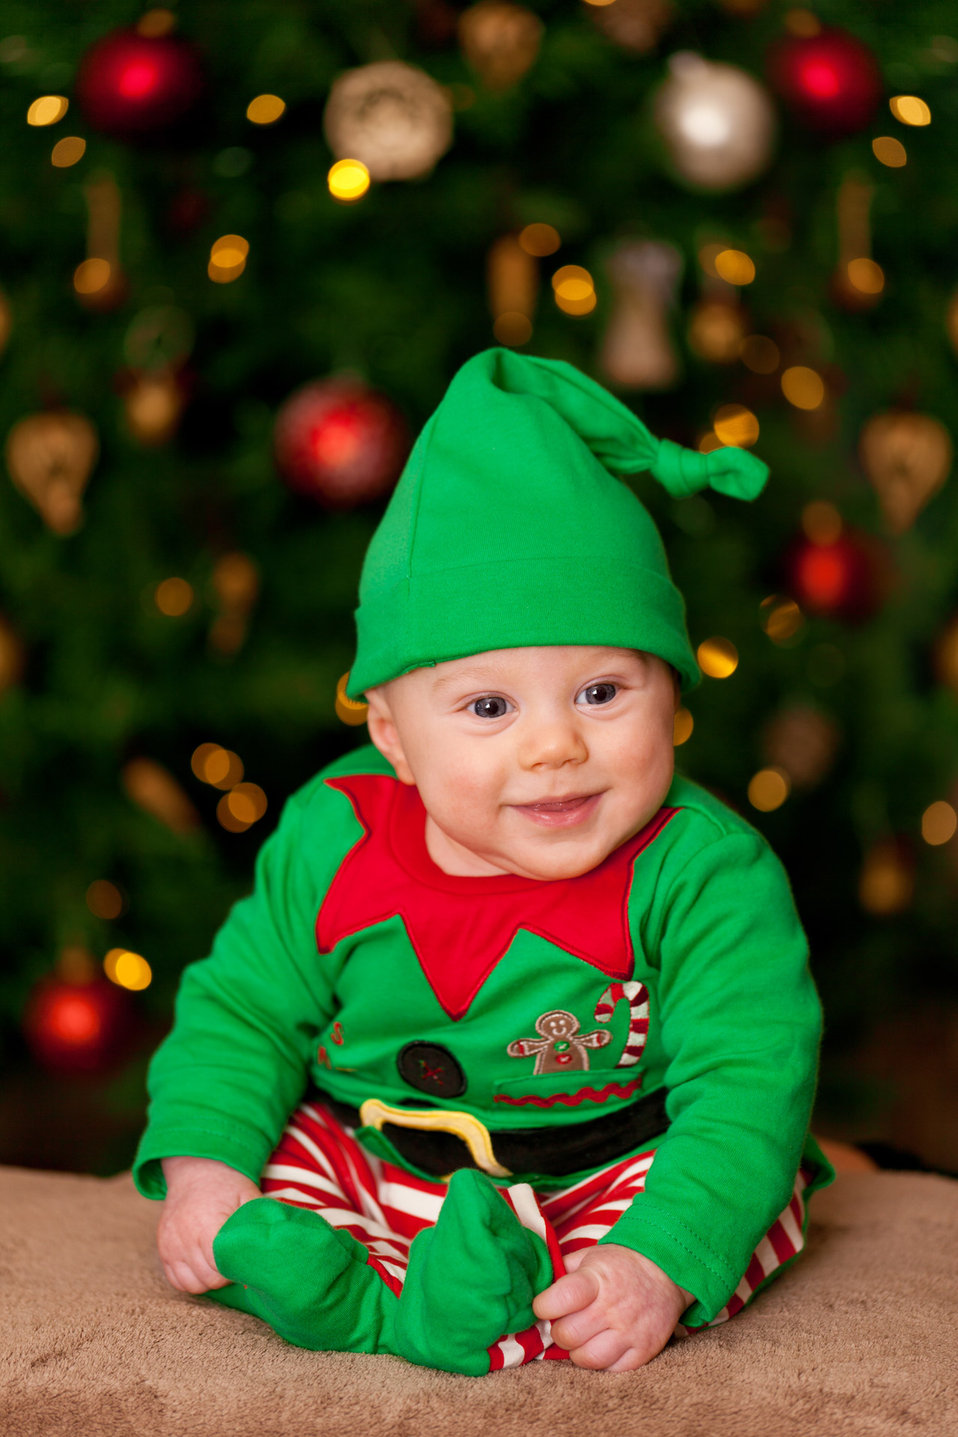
Cute elf

Cute baby elf in front of a christmas tree.